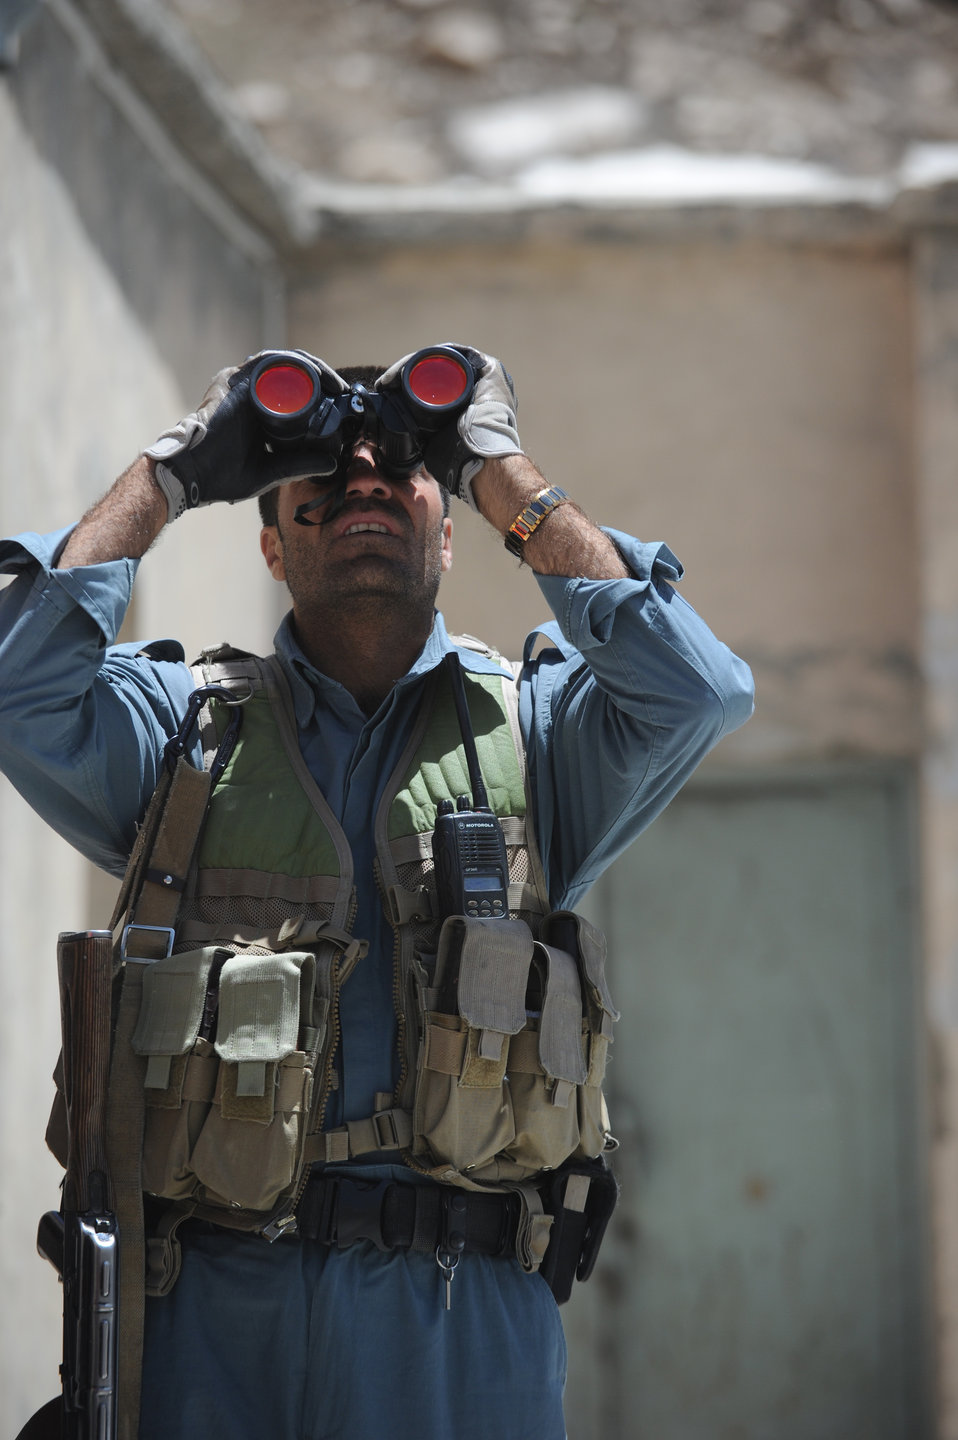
Security at the North entrance of the Salang Tunnel on the border of Parwan and Baghlan Provinces, Afghanistan, on Wednesday, June 15, 2011. (S.K.Vemmer/Department of State)